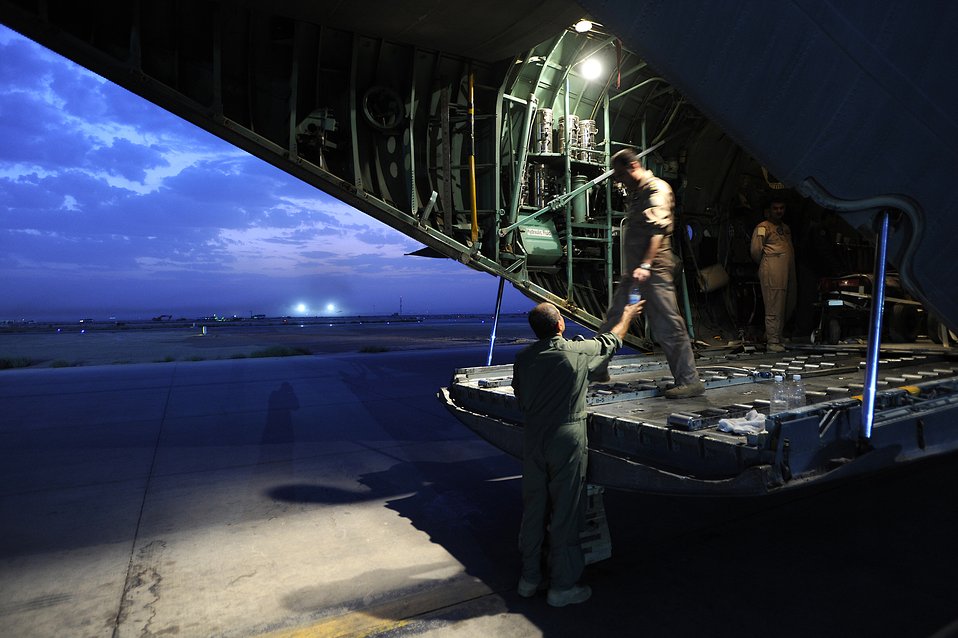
Working by moonlight

An Iraqi airman gives another airman a water bottle Oct. 11 at Joint Base Balad, Iraq. The Iraqi airmen were on a cargo resupply mission with members of the U.S. Air Force 370th Air Expeditionary Advisory Squadron, who operate C-130 aircraft used for transporting troops, supplies and distinguished visitors.